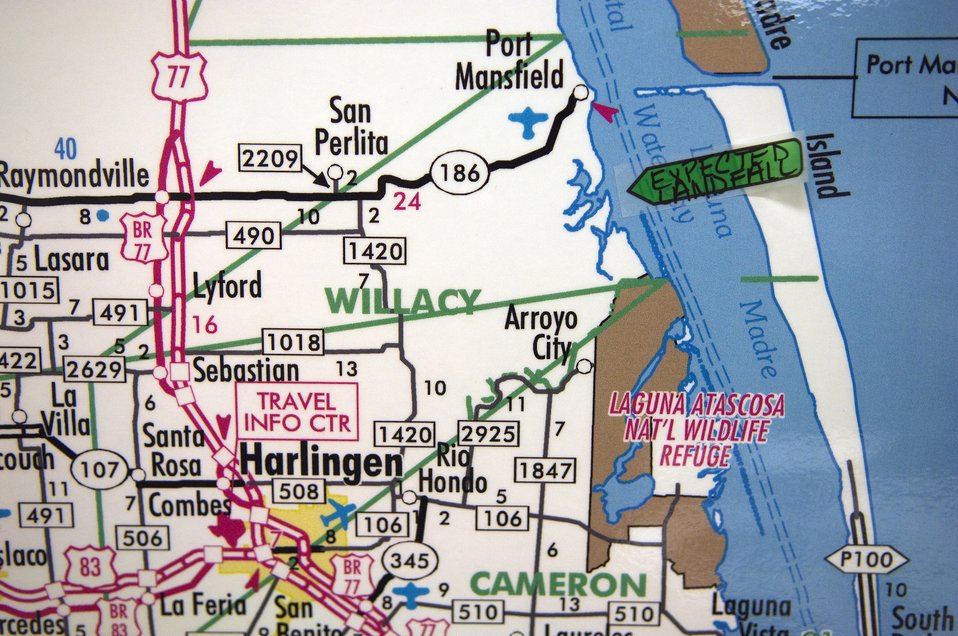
Texas military forces ready for Hurricane Dolly landfall

A map of South East Texas hangs in the headquarters of the Standing Joint Inter-Agency Task Force located at the Army National Guard Armory July 22 Weslaco, Texas. The map pinpoints the expected impact point of Hurricane Dolly.